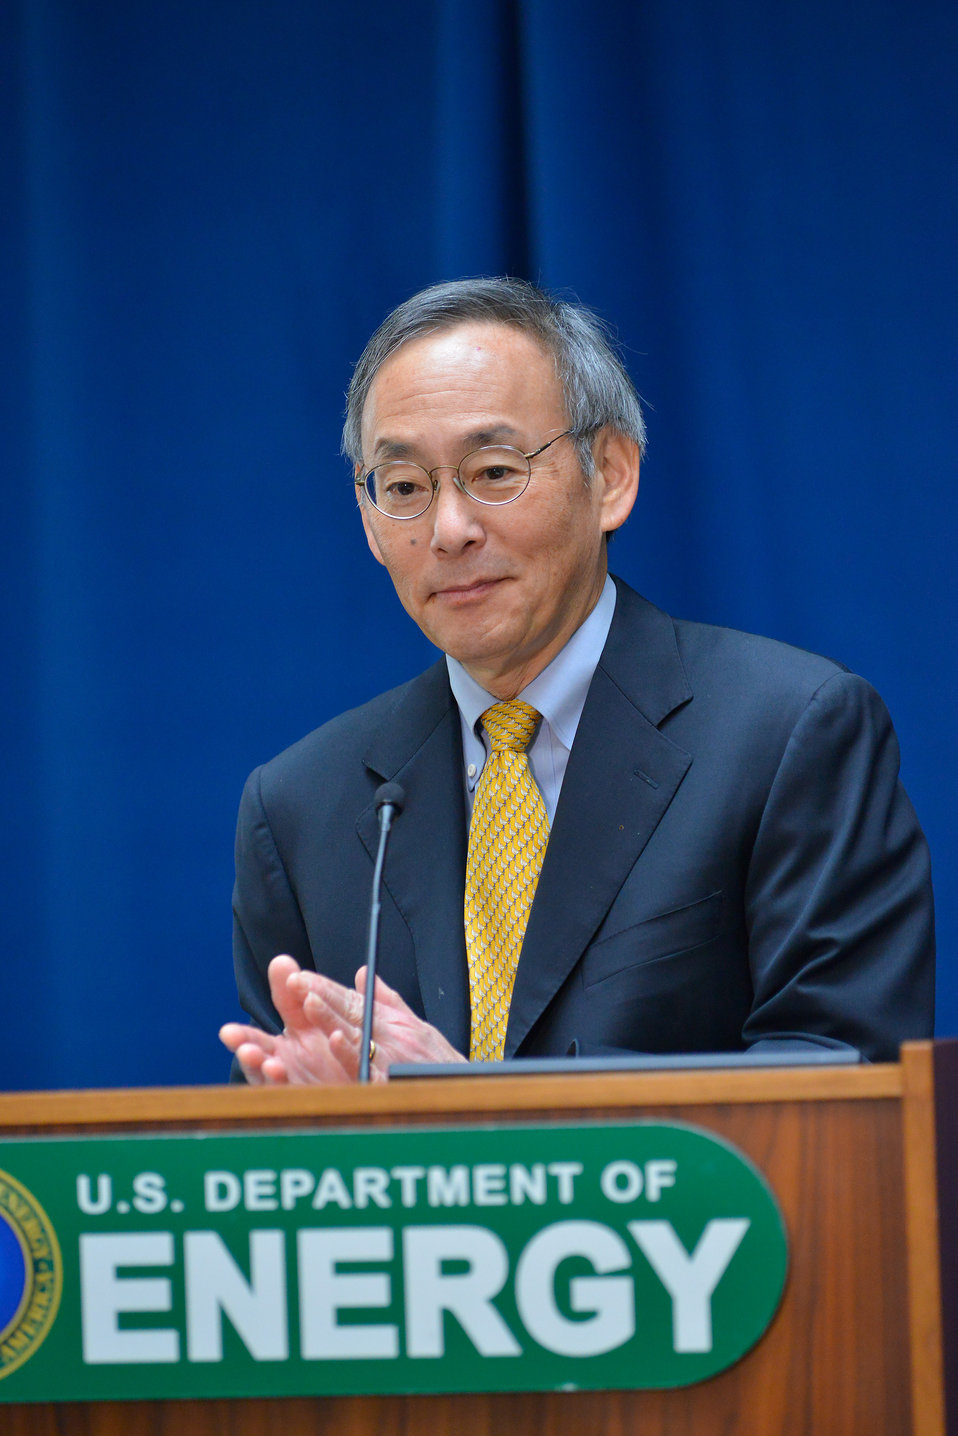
Secretary Chu

Secretary Steven Chu gave keynote remarks and discussed 35 years of all-of-the-above energy excellence and innovation at the October 4 event.